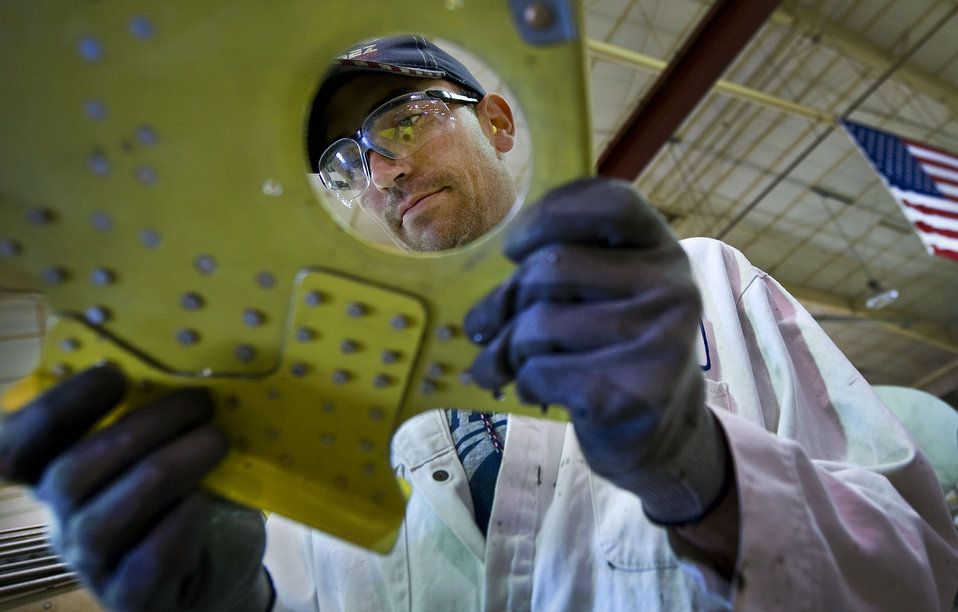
A-10 Hog Up

Eric Pedersen inspects a rib of an A-10 Thunderbolt II inner wing Dec. 17, 2009, after flattening the rivets. A-10s are undergoing a wing upgrade at the 309th Aerospace Maintenance and Regeneration Group at Davis-Monthan Air Force Base, Ariz. The upgrade process, affectionately called the